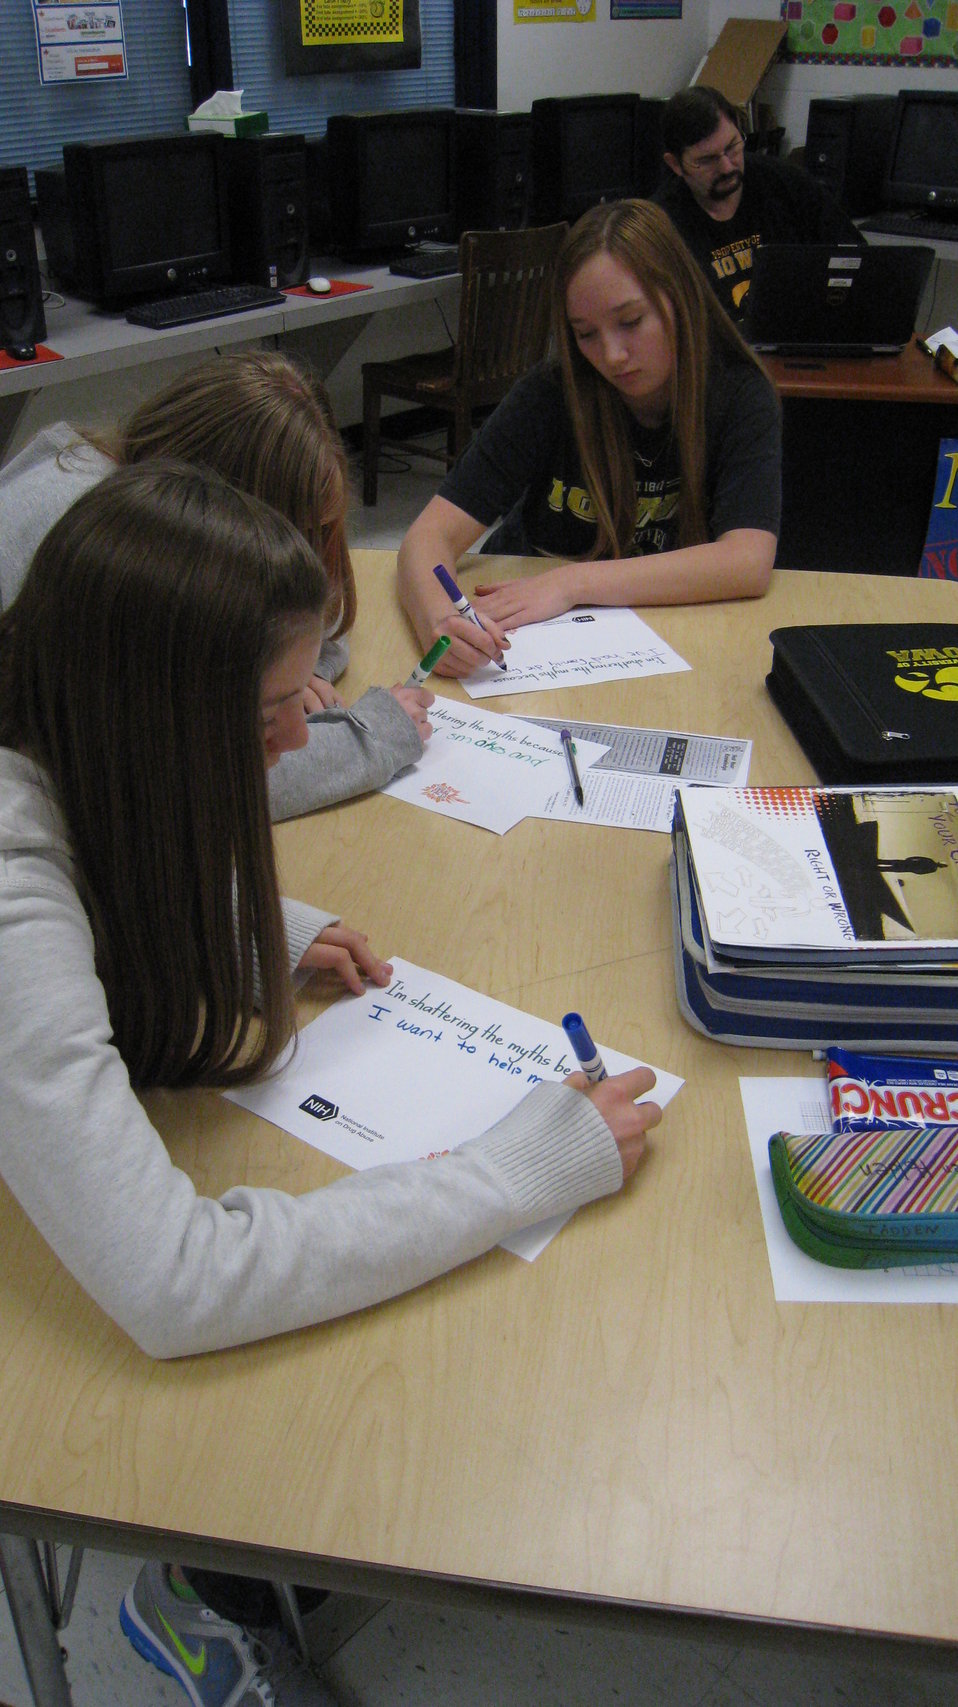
I'm Shattering the Myths Because...

Teenagers from the Van Buren County SAFE Coalition's, Youth Leadership Council (YLC) in Keosauqua, Iowa participate in various events during National Drug Facts Week, 2014.